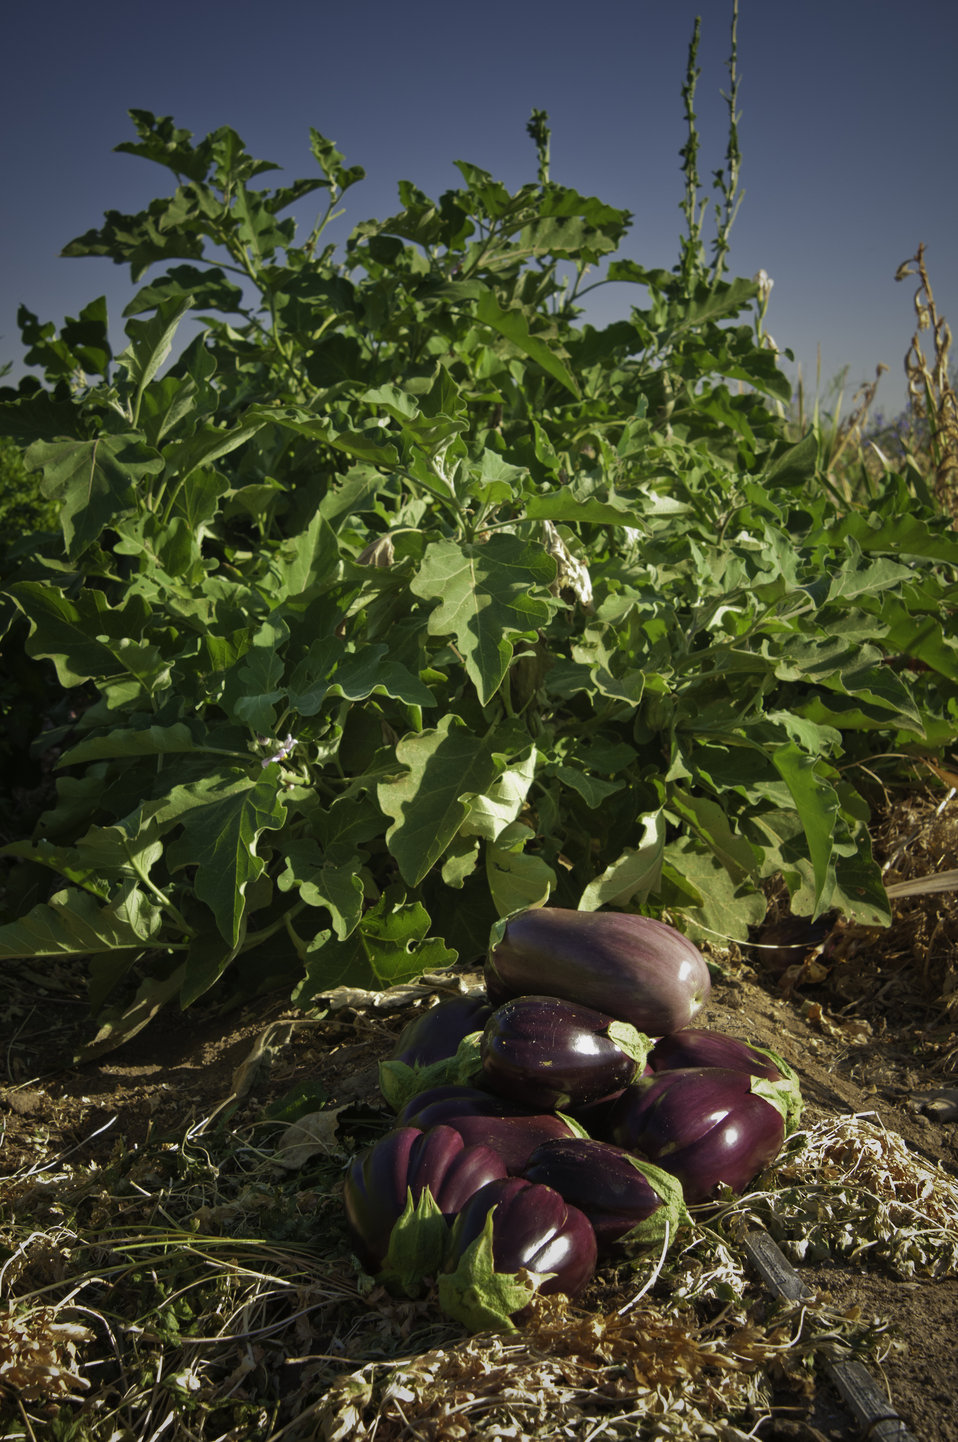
Eggplant grown on May's Flower's Farm in Sanger, California on Thursday, August 29, 2013.